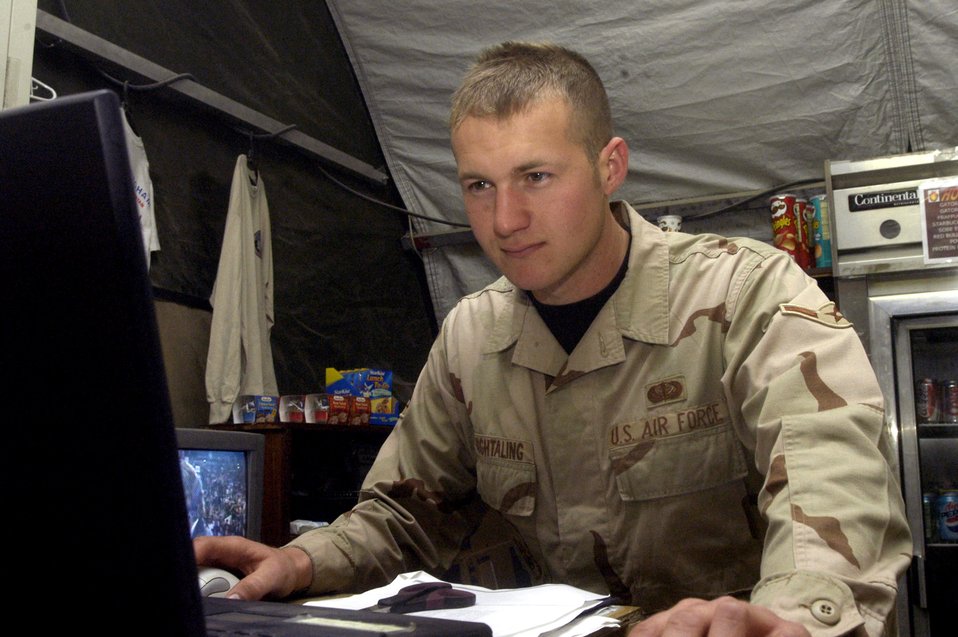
Serving through the season: Airman Cameron Houghtaling Jr.

Airman Cameron Houghtaling Jr. is a Services technician deployed to Bagram Air Base, Afghanistan, from Lajes Field, Azores.